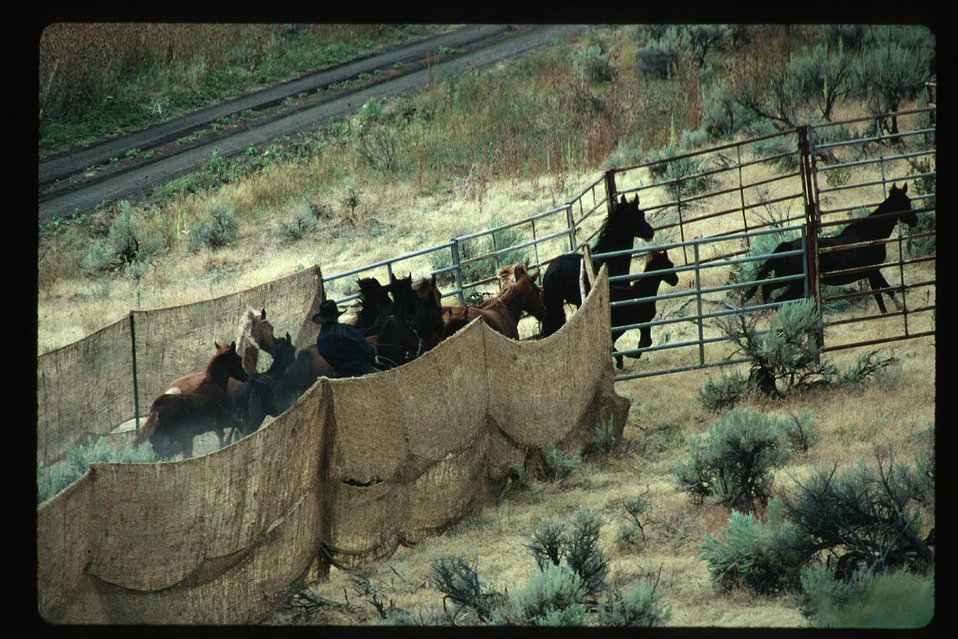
Wild horse being trapped Wild Horse and Burro Adoption Program LSRD Lower Snake River District